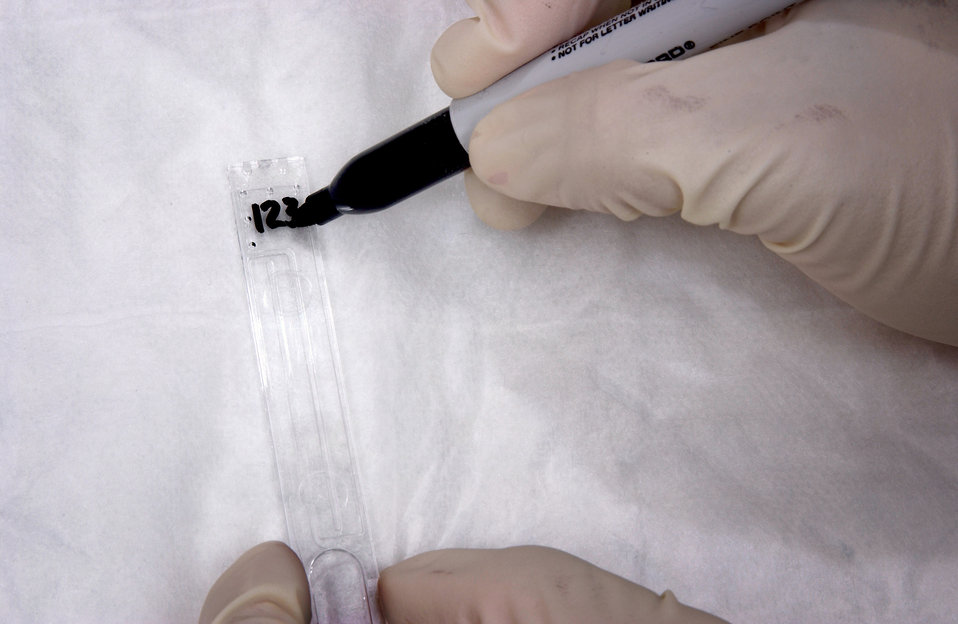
Label the agglutination test slide of the CAPILLUS� HIV-1/HIV-2 Rapid Test Kit with the client ID number. (Step 2 of 12)